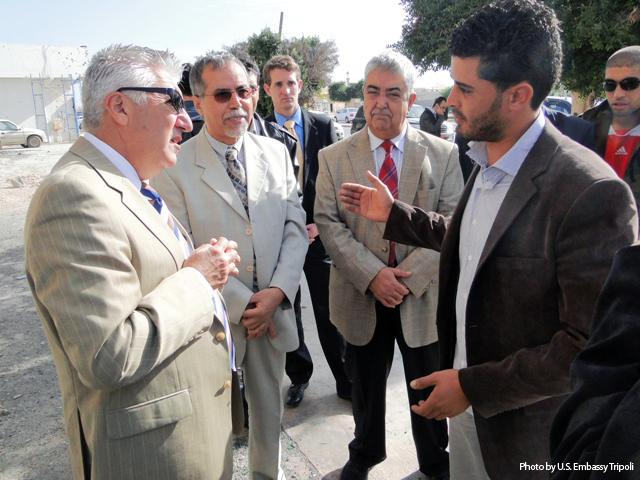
Ambassador Cretz Meets With a Misuratan Resident

U.S. Ambassador to Libya Gene Cretz meets with a Misuratan resident who brought American photographer Chris Hondros to a medical facility while under heavy gunfire in Misurata, Libya, on November 26, 2011.